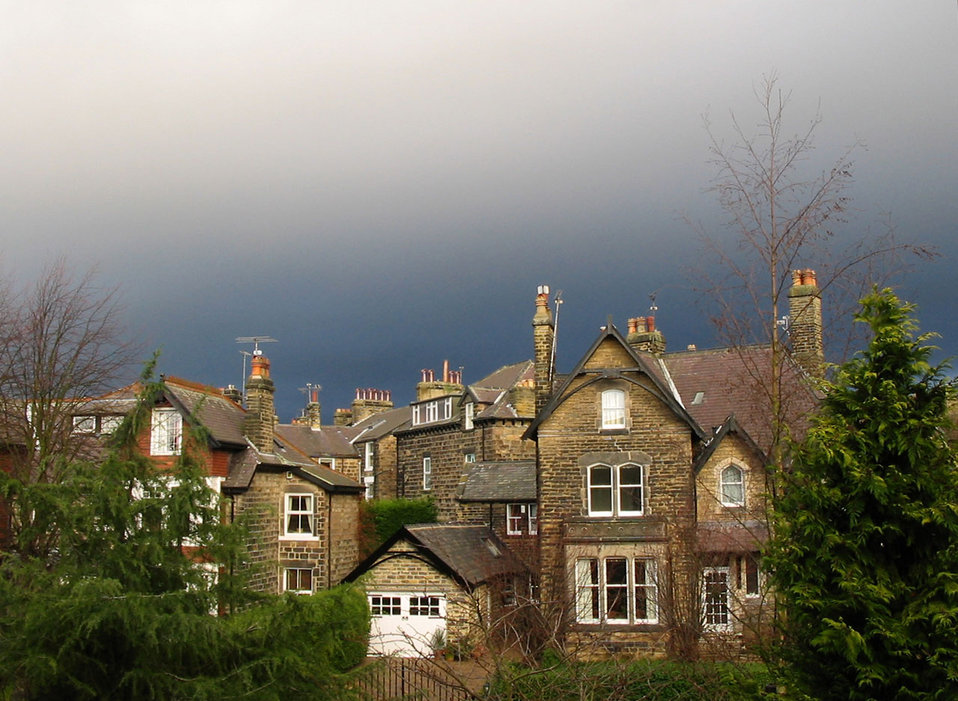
Before the storm

Harrogate right before the storm is coming.